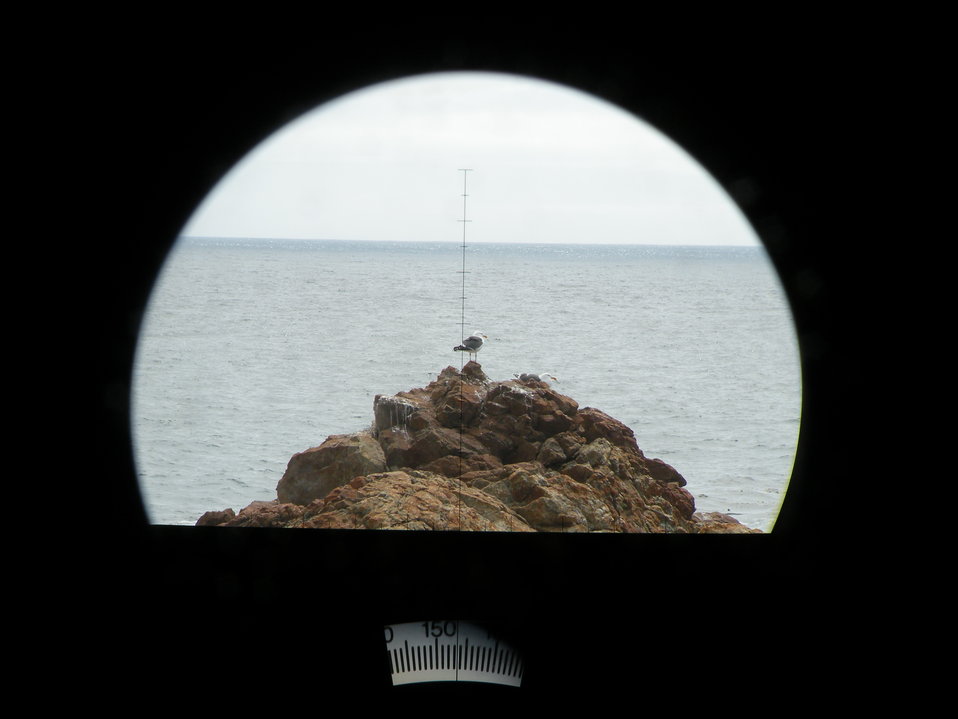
A California Gull seen through the big eye lens. The angle to the horizon is visible on the bottom of the picture. Using that angle and trigonometry, the distance to the object in the view finder can be calculated.